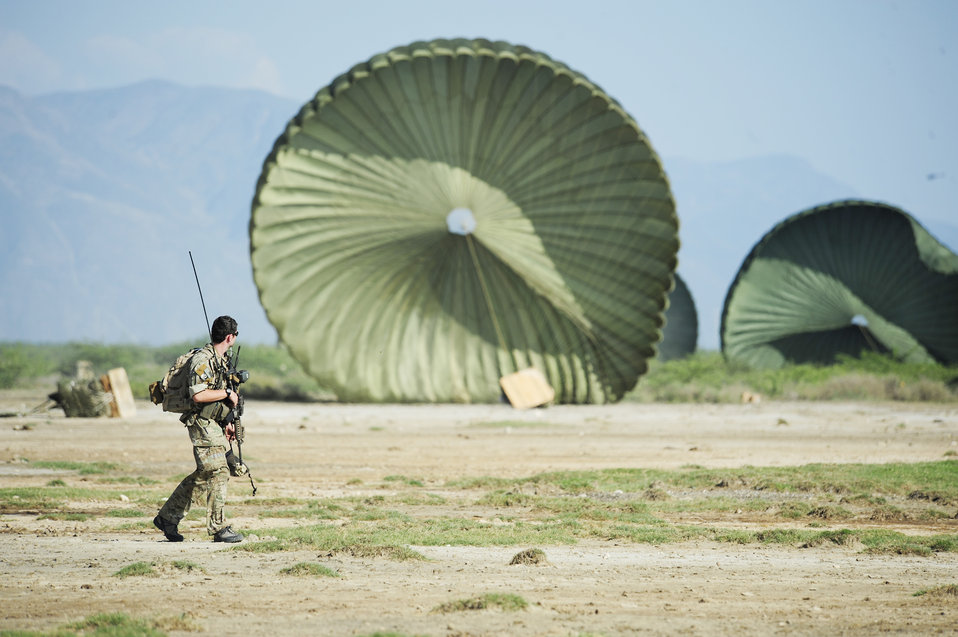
Haiti Earthquake Relief

An Air Force combat controller watches pallets after an air delivery of humanitarian aid Jan 18, 2010, in Port-au-Prince, Haiti for distribution. Department of Defense assets have been deployed to assist in the Haiti relief effort following a magnitude 7 earthquake that hit the city on Jan. 12, 2010. The combat controller is assigned to the 23rd Special Tactics Squadron at Hurlburt Field Fla.